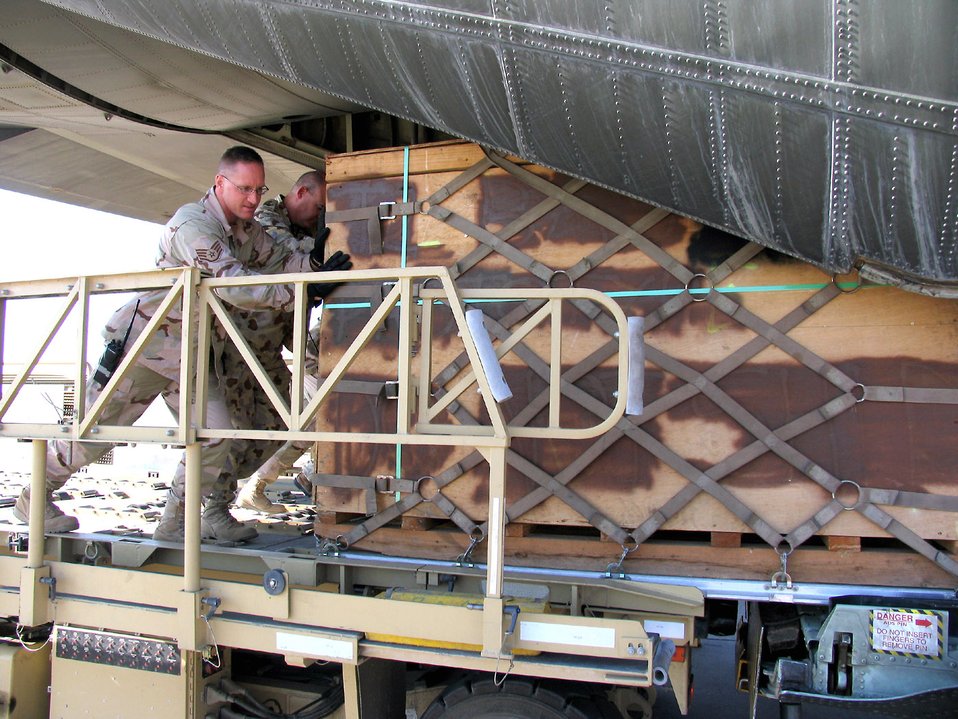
Record cargo movers

SOUTHWEST ASIA (AFPN) -- Staff Sgt. Stefan Halushka helps an Australian C-130 Hercules technician load a cargo pallet onto an Australian cargo aircraft. Sergeant Halushka is with the 386th Expeditionary Logistics Readiness Squadron and deployed from the 919th Logistics Readiness Squadron at Eglin Air Force Base, Fla.